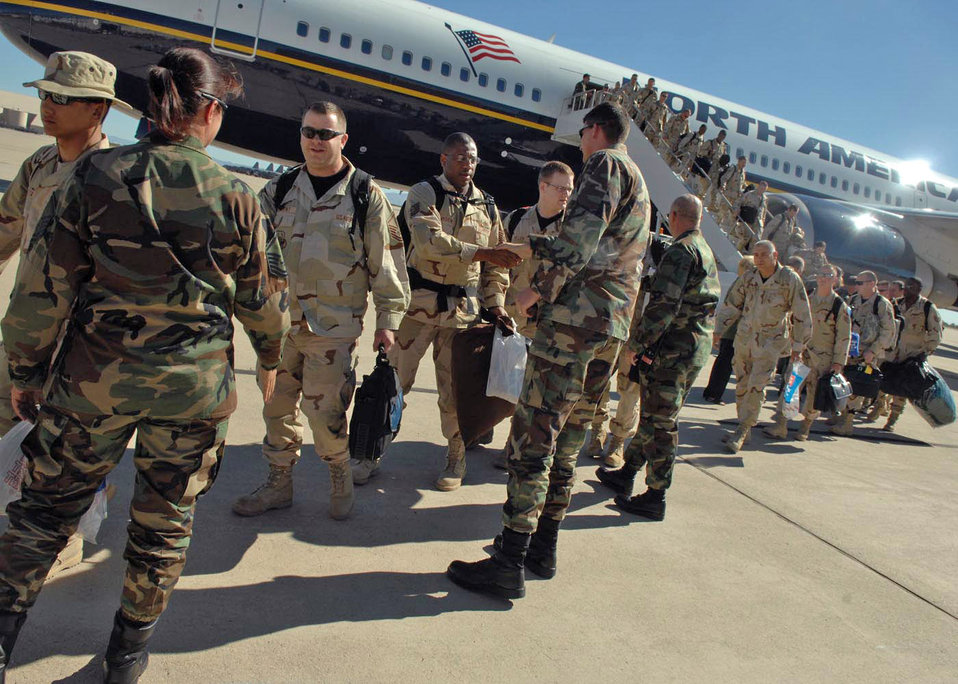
Hugs, kisses, handshakes for returnees

About 200 Airmen from Davis-Monthan Air Force Base, Ariz., return home from Afghanistan Oct. 23 after a seven-month deployment in support of Operation Enduring Freedom. The Airmen were greeted by base leadership and their families after stepping off the plane.